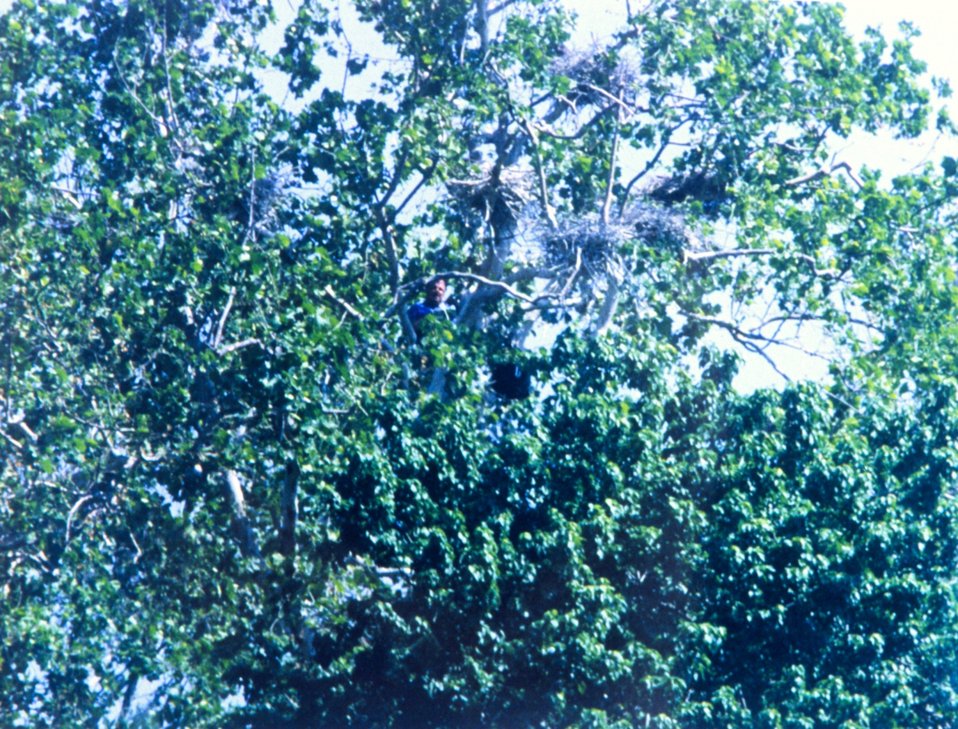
Great Blue Heron nesting area, or as it is called, a heronry. Yes, that is a person's head peering out from the tree. Why he was there is unknown.